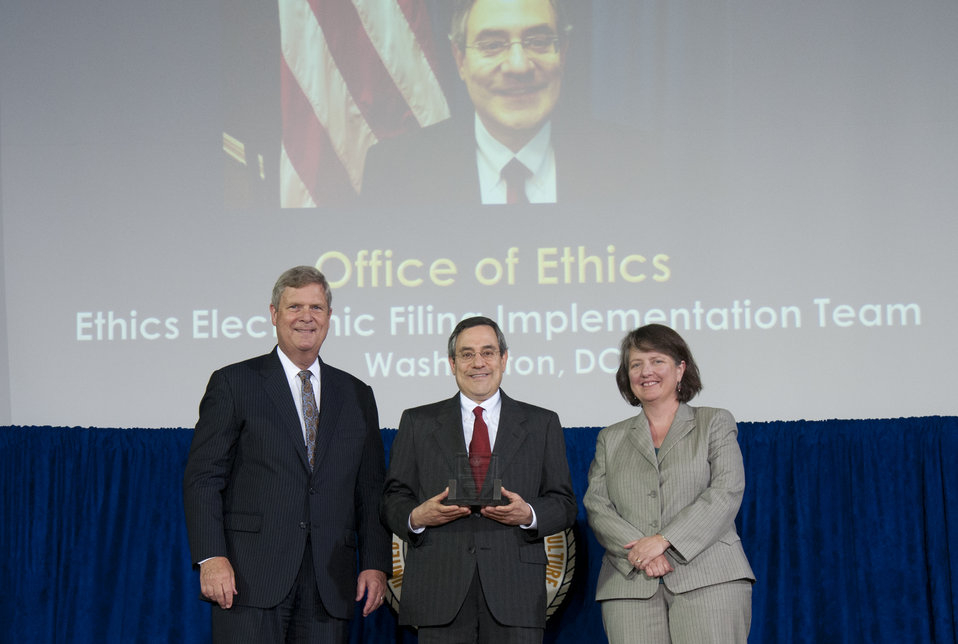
Agriculture Secretary Tom Vilsack and Agriculture Deputy Secretary Kathleen Merrigan present the Secretary’s Honor Award to Ethics Electronic Filing Implementation Team Office of Ethics, Office of Human Resource Management (OHRM) group leader Stuart A. Bender at the U.S. Department of Agriculture (USDA) 64th Annual Honor Awards Ceremony in Washington, D.C. on Wednesday, Sept. 12, 2012. The Ethics Electronic Filing Implementation Team provided significant contributions to the management excellence of USDA by implementing secure electronic filing of ethics financial disclosure reports for the Department’s 700 public financial disclosure filers.